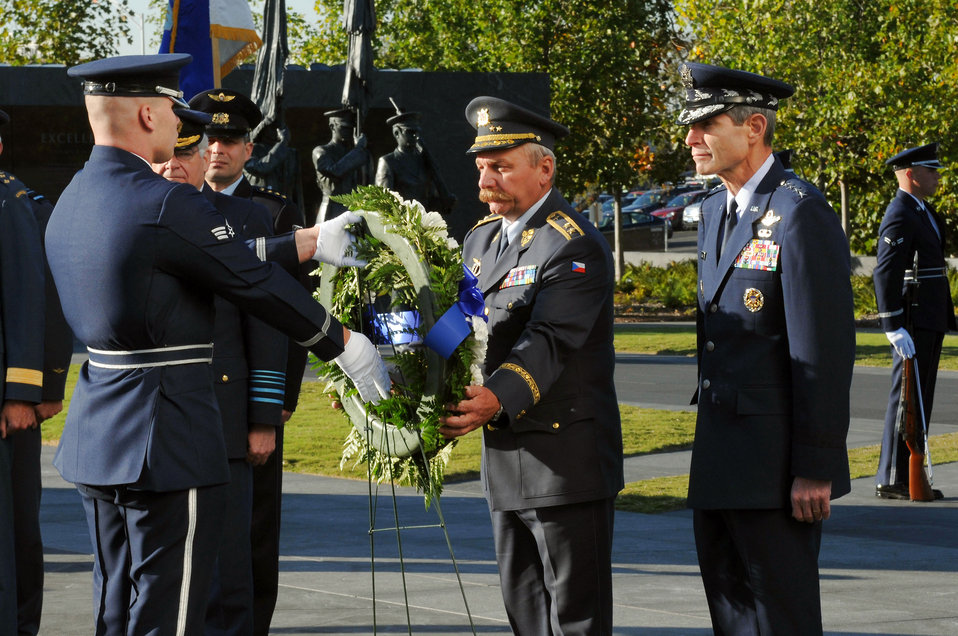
NATO air chiefs discuss common challenges, solutions

Czech Republic Maj. Gen. Ladislav Minarik (center) and Gen. Norton A. Schwartz participate in a wreath-laying ceremony at the Air Force Memorial Oct. 7 in Arlington, Va. NATO air chiefs representing 19 countries toured Air Force facilities during their visit. General Minarik is the deputy joint forces commander and commander of the Czech air defense forces, and General Schwartz is the Air Force chief of staff.